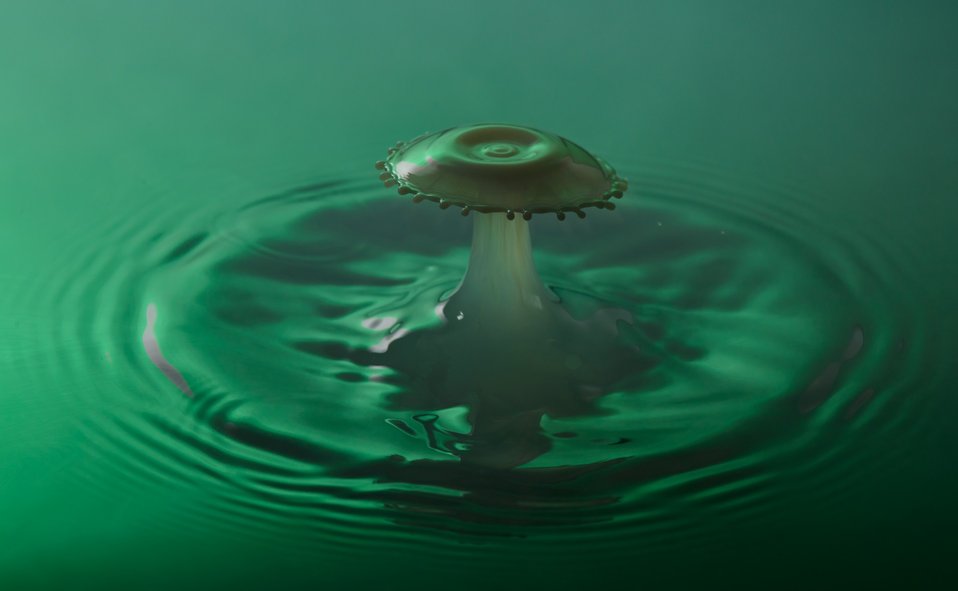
Green umbrella

The impact of drops of milk.